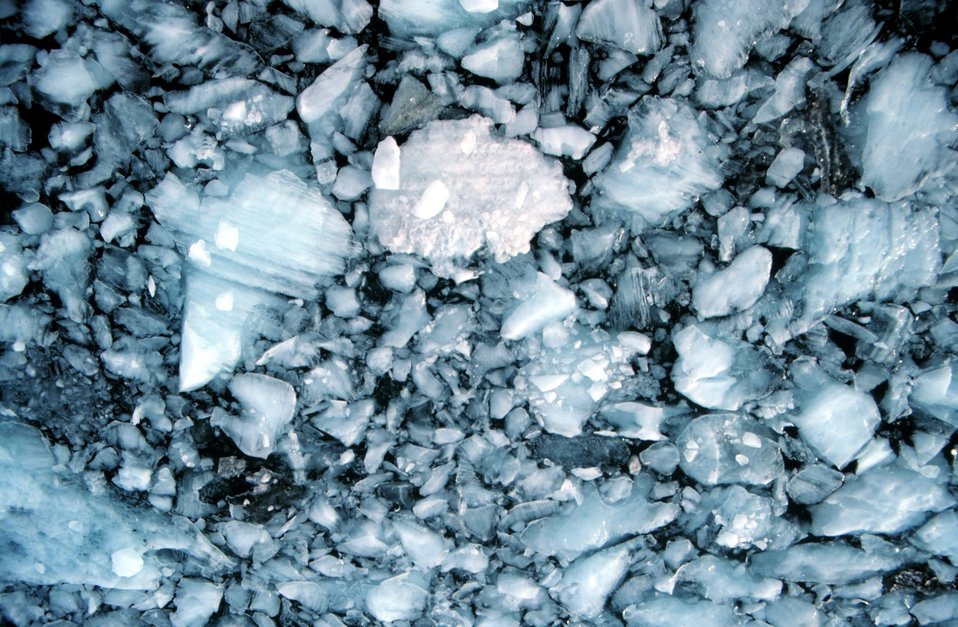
Glacial ice chunks in Icy Bay.